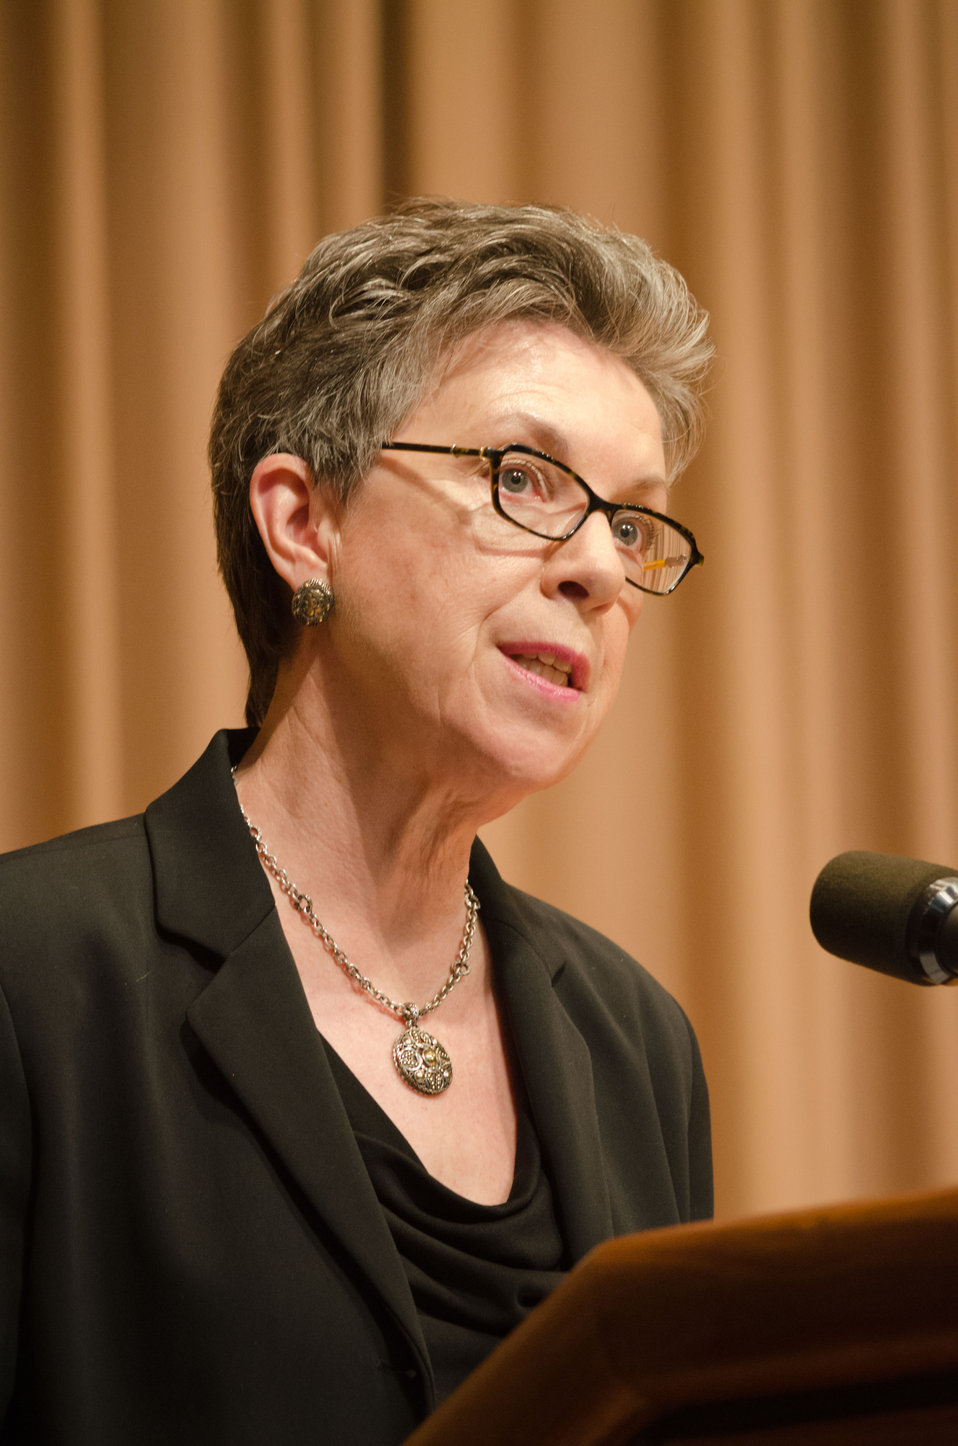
Agriculture Under Secretary Research, Education and Economics Mistress of Ceremonies Dr. Catherine Woteki introduces the speakers at the 2012 Asian Pacific American Heritage Observance “Striving for Excellence in Leadership, Diversity and Inclusion” at the U.S. Department of Agriculture in Washington, D.C. on Thursday, May 24, 2012.